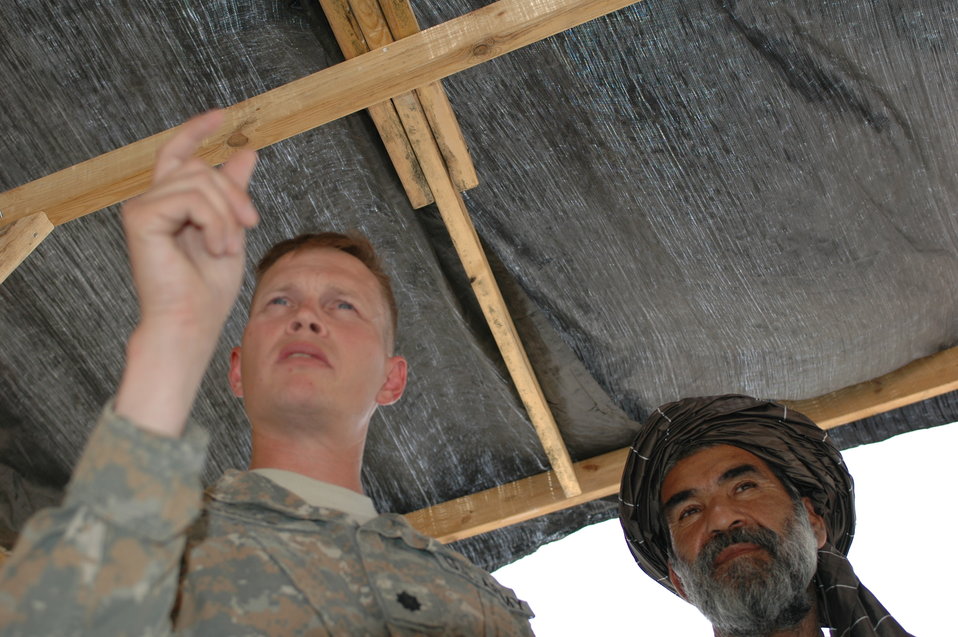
CODEL Berman